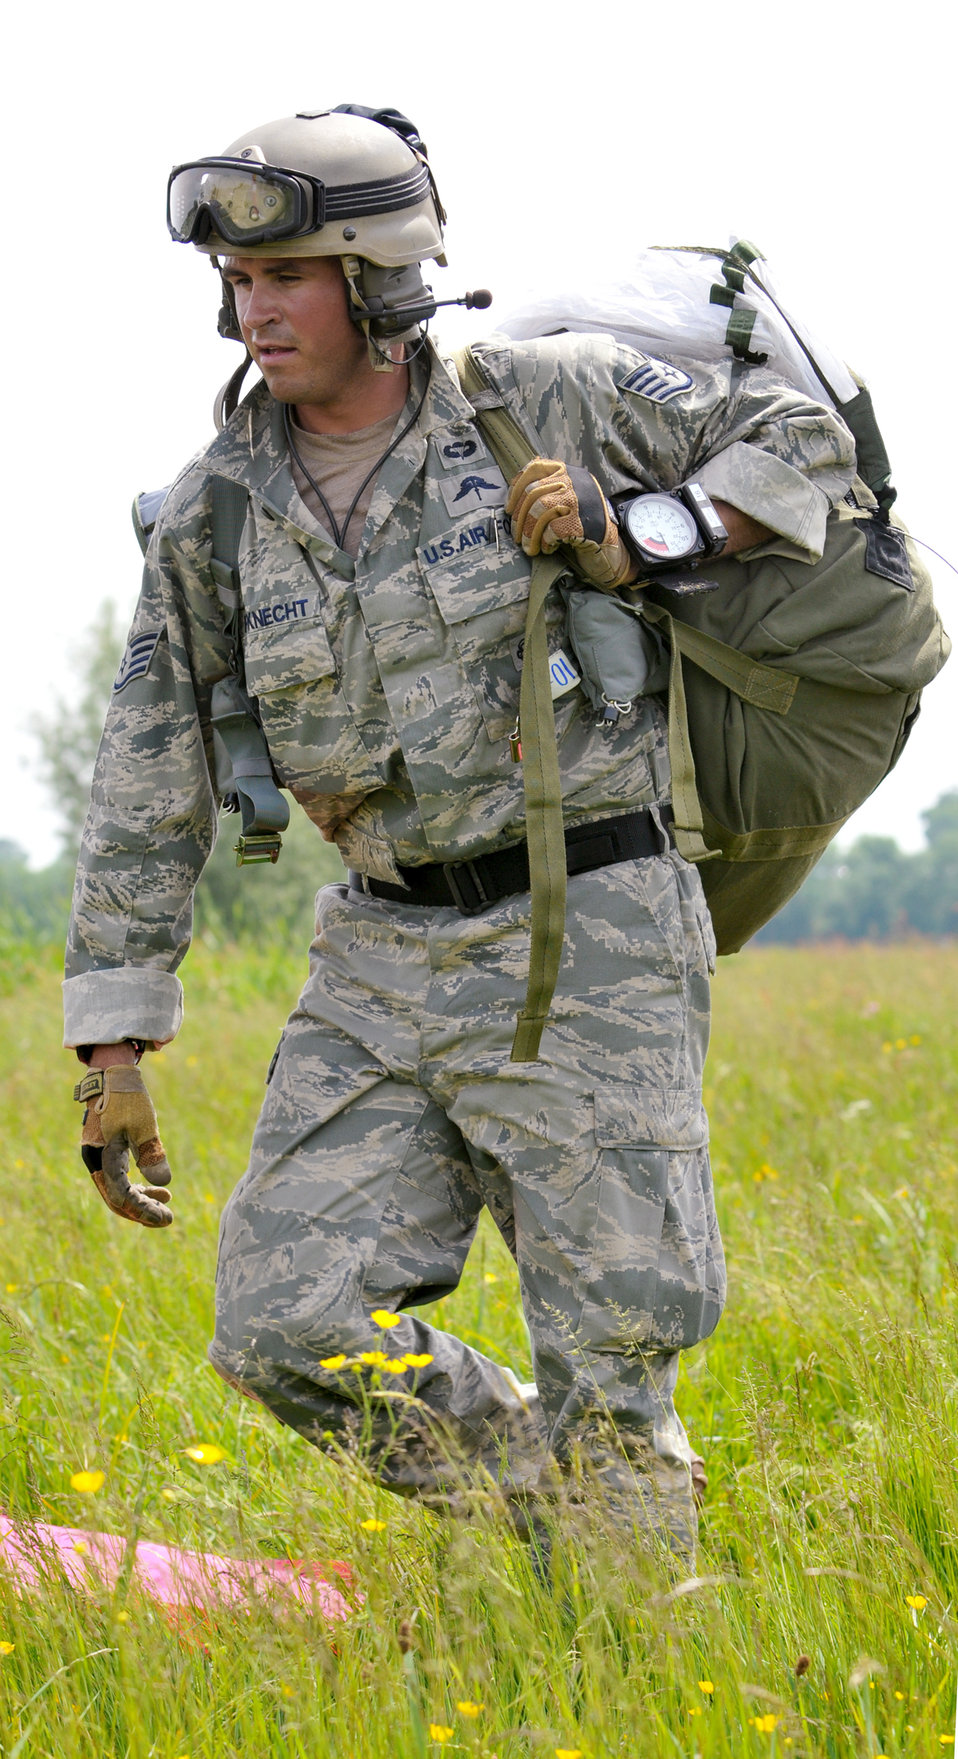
D-Day 66th anniversary

A member of the 321st Special Tactics Squadron hikes June 5, 2010, in Normandy, France to a muster area after parachuting into the same drop zone used by Allies on D-Day. The squadron is assigned to Royal Air Force Mildenhall, England.